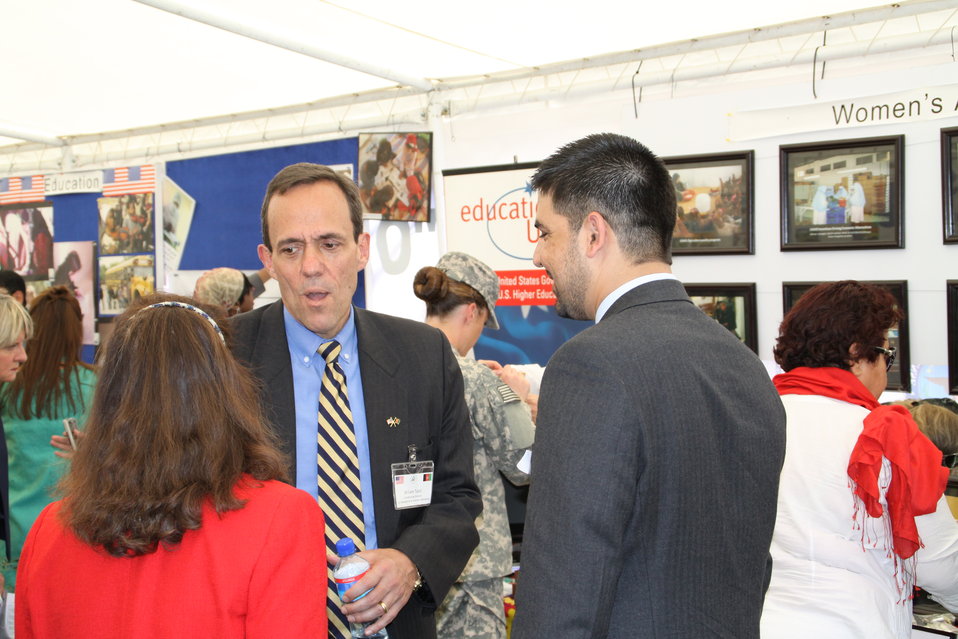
Kabul Official July 4th Celebration